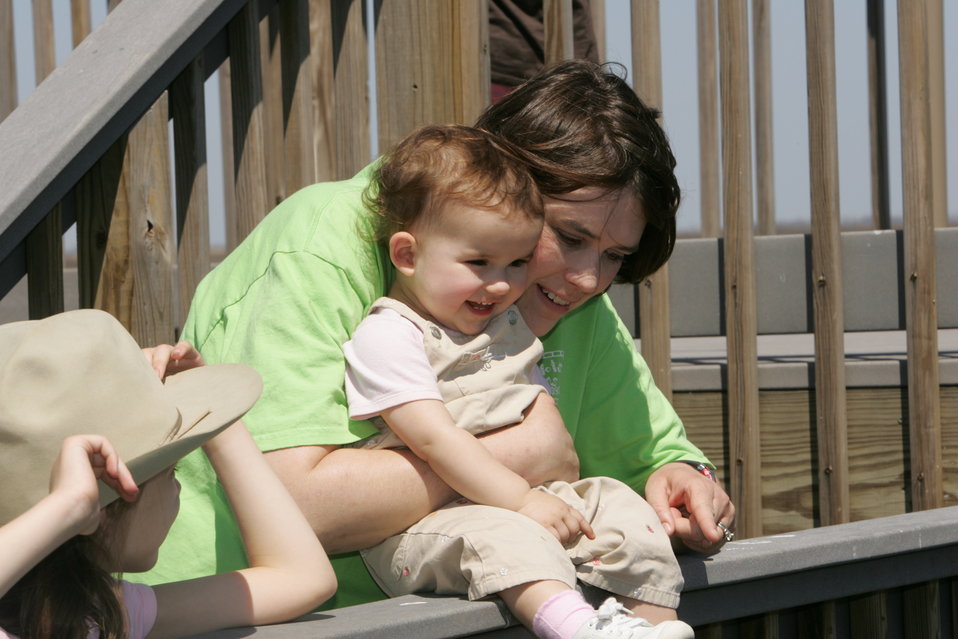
A beautiful day to enjoy the wildlife refuge

A family enjoys the sites from a refuge viewing area.